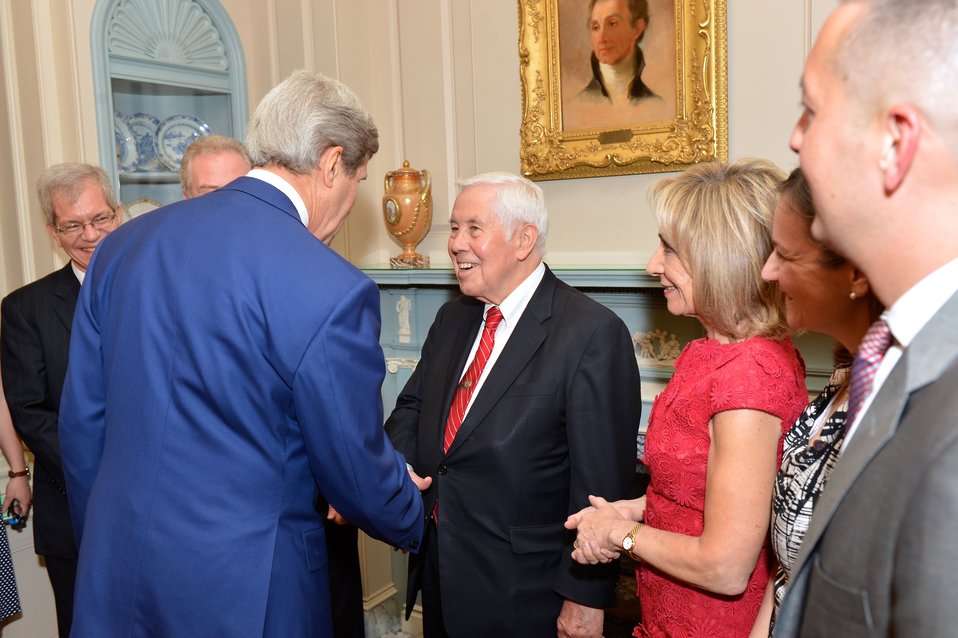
Secretary Kerry Welcomes Former Senator Lugar to Celebration of 90th Anniversary of U.S. Foreign Service

With American journalist Andrea Mitchell and U.S. Representative Chris Van Hollen looking on, U.S. Secretary of State John Kerry shakes hands with former Senator Richard Lugar before delivering remarks at an event celebrating the 90th Anniversary of the United States Foreign Service at the U.S. Department of State in Washington, D.C., on May 22, 2014. The modern Foreign Service was created on May 24, 1924, with the passage of the Rogers Act establishing the current merit-based, professional Foreign Service.